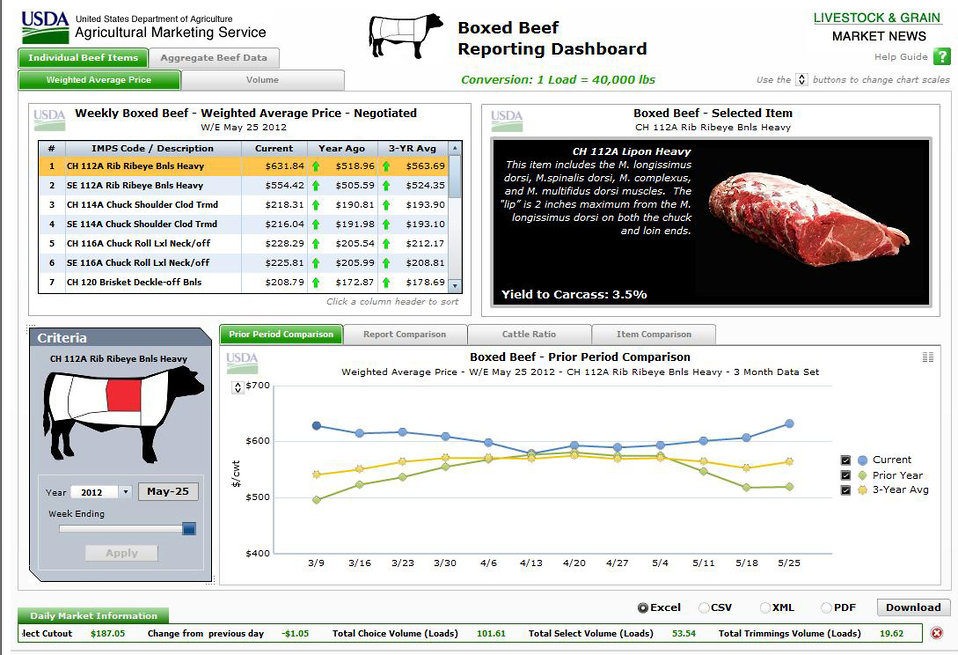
Boxed Beef Picture

This is a screenshot of the Boxed Beef Dashboard on June 1, 2012. The livestock dashboard allows you to see weekly volume and price information presented in graphs and tables that can be customized for viewing and downloaded for use in reports and presentations. The dashboard is a service of the U.S. Department of Agriculture (USDA) Agricultural Market Service (AMS) market news for livestock and grain.